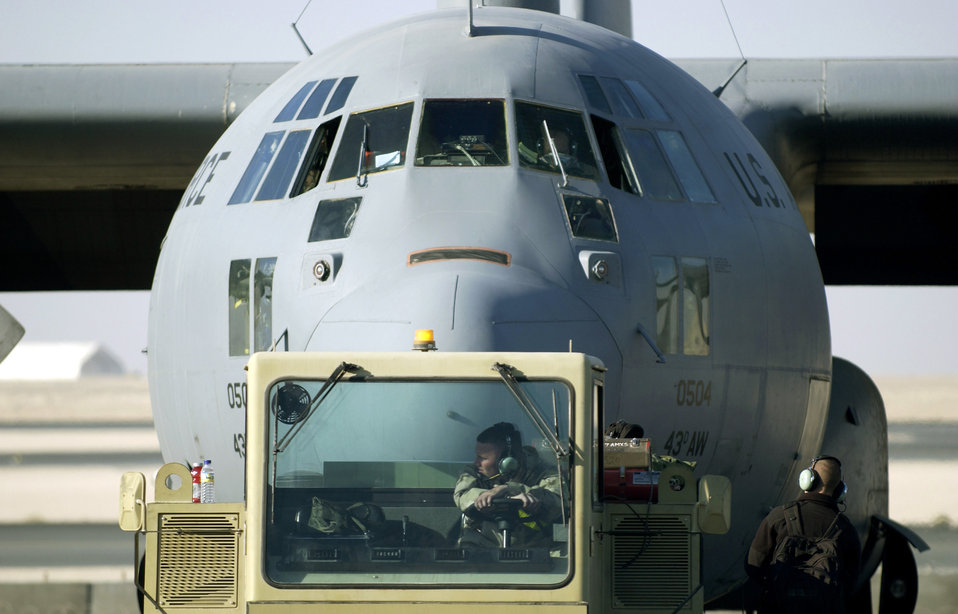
Need a lift?

SOUTHWEST ASIA - A maintenance specialist from the 379th Air Expeditionary Wing waits to tow a C-130 Hercules at a forward deployed location here Dec. 4. The C-130s are supporting both operations Iraqi Freedom and Enduring Freedom.